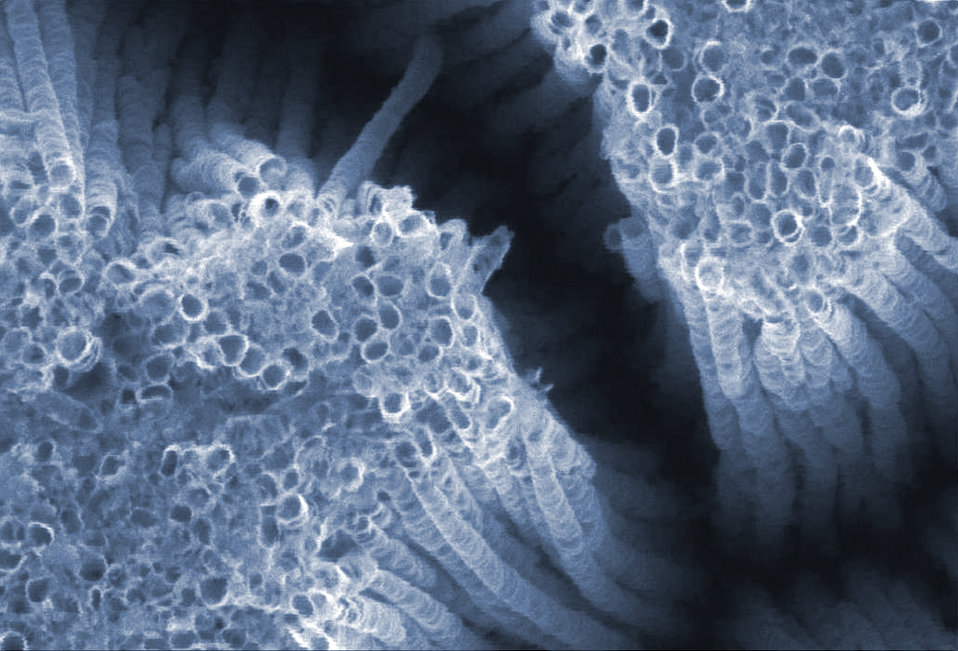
Titanium Dioxide TiO2

An electron micrograph of nanotubes made from titanium dioxide (TiO2). Three of the first five documents in the new NIST Special Publications 1200 series describe protocols for preparing TiO2 dispersions for laboratory tests. (Color added for clarity.)